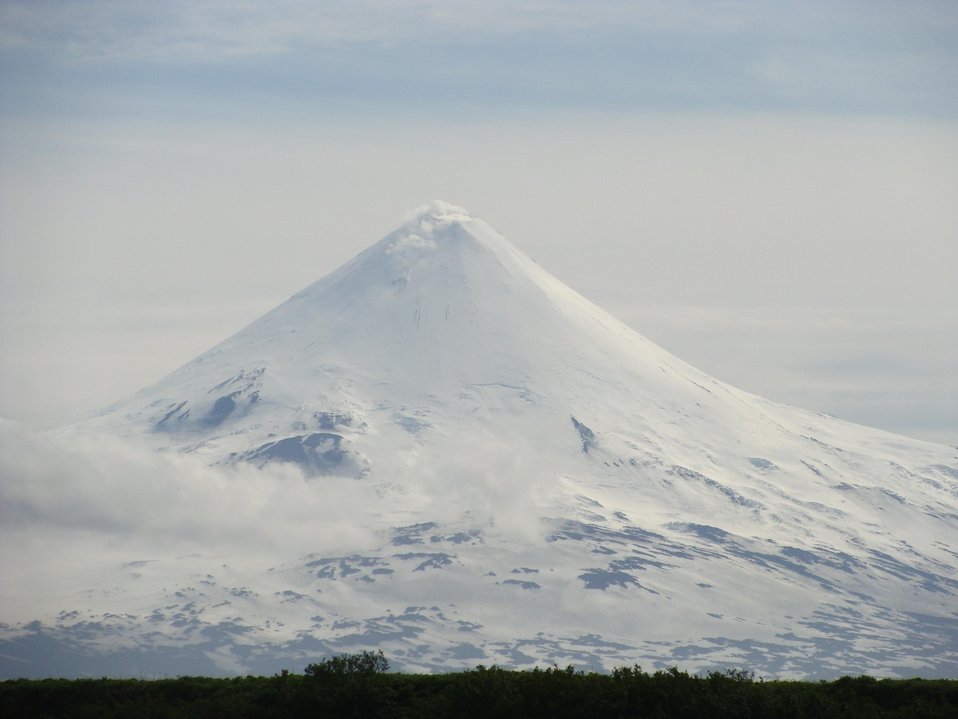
Izembek-Becharof National Wildlife Refuges, AK

Photo: Corey A. Anco, USFWS
2011 Wilderness Fellow